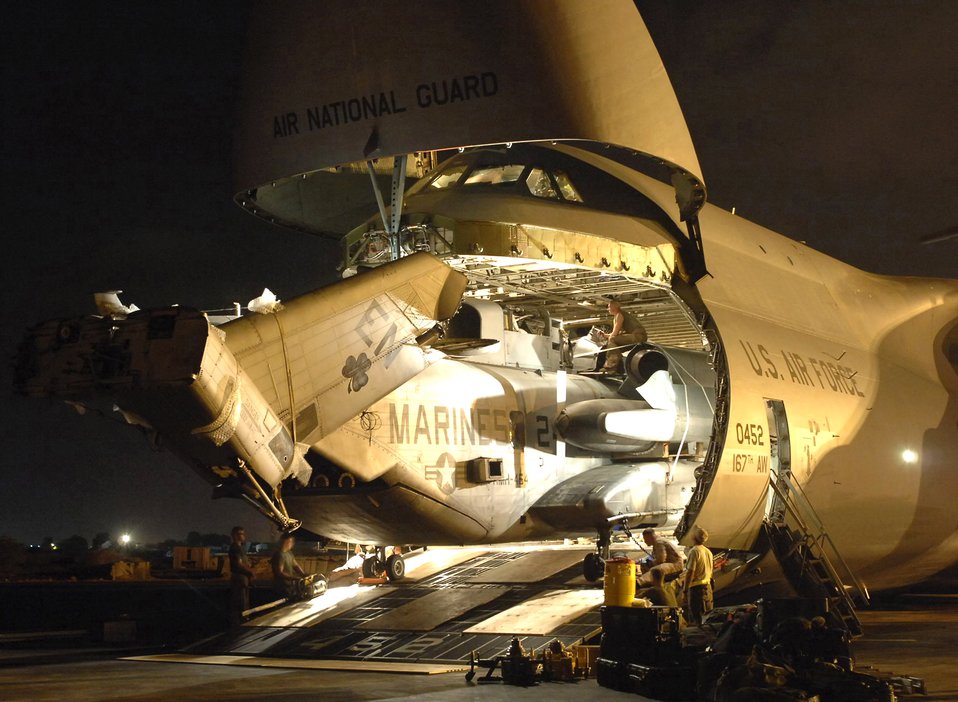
Air National Guard crew flies its 1st C-5 to Djibouti

Crews remove one of two Marine CH-53E Super Stallion helicopters from a C-5 Galaxy April 10 in Djibouti, Africa. The Galaxy's overseas journey was a first for the West Virginia Air National Guard's 167th Airlift Wing, a unit that recently gained the massive airframe capable of transporting oversized cargo to any theater of combat on the globe.